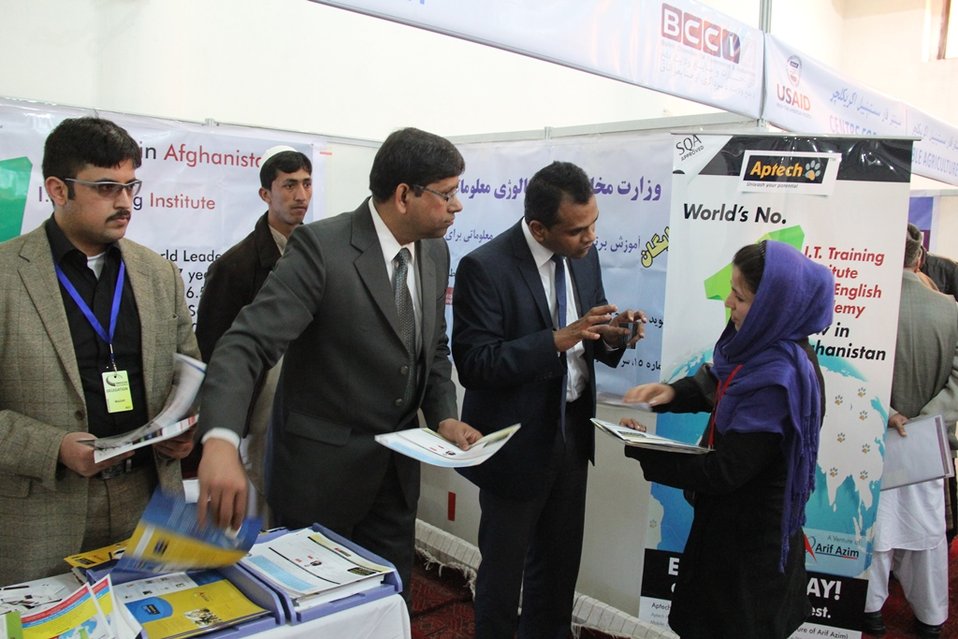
FAIDA innovation Conference March 4.2014